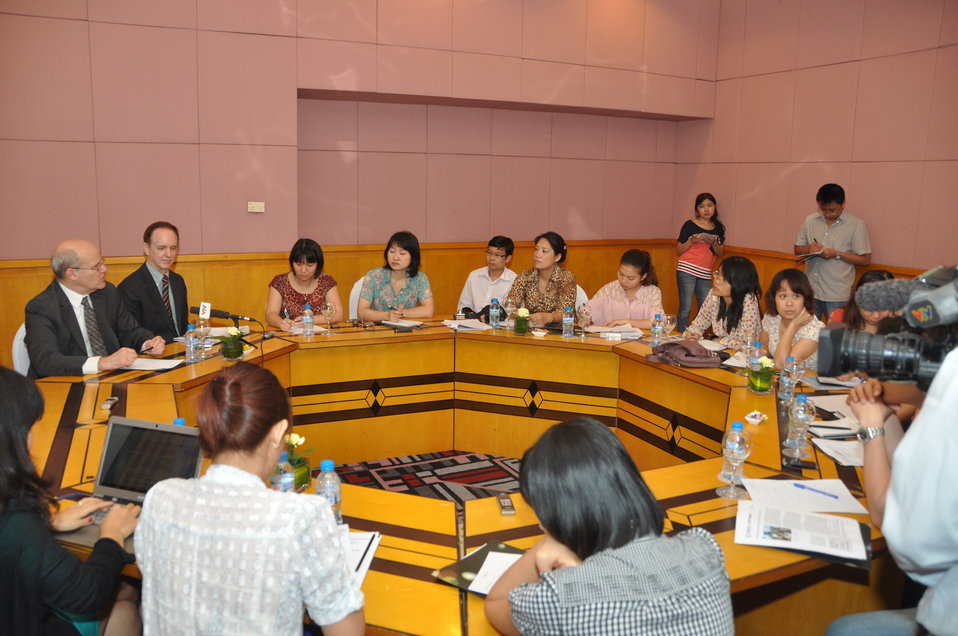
USAID Deputy Administrator Donald Steinberg meets the press in Hanoi on May 8.

USAID Deputy Administrator Donald Steinberg Visits Vietnam: USAID Photo